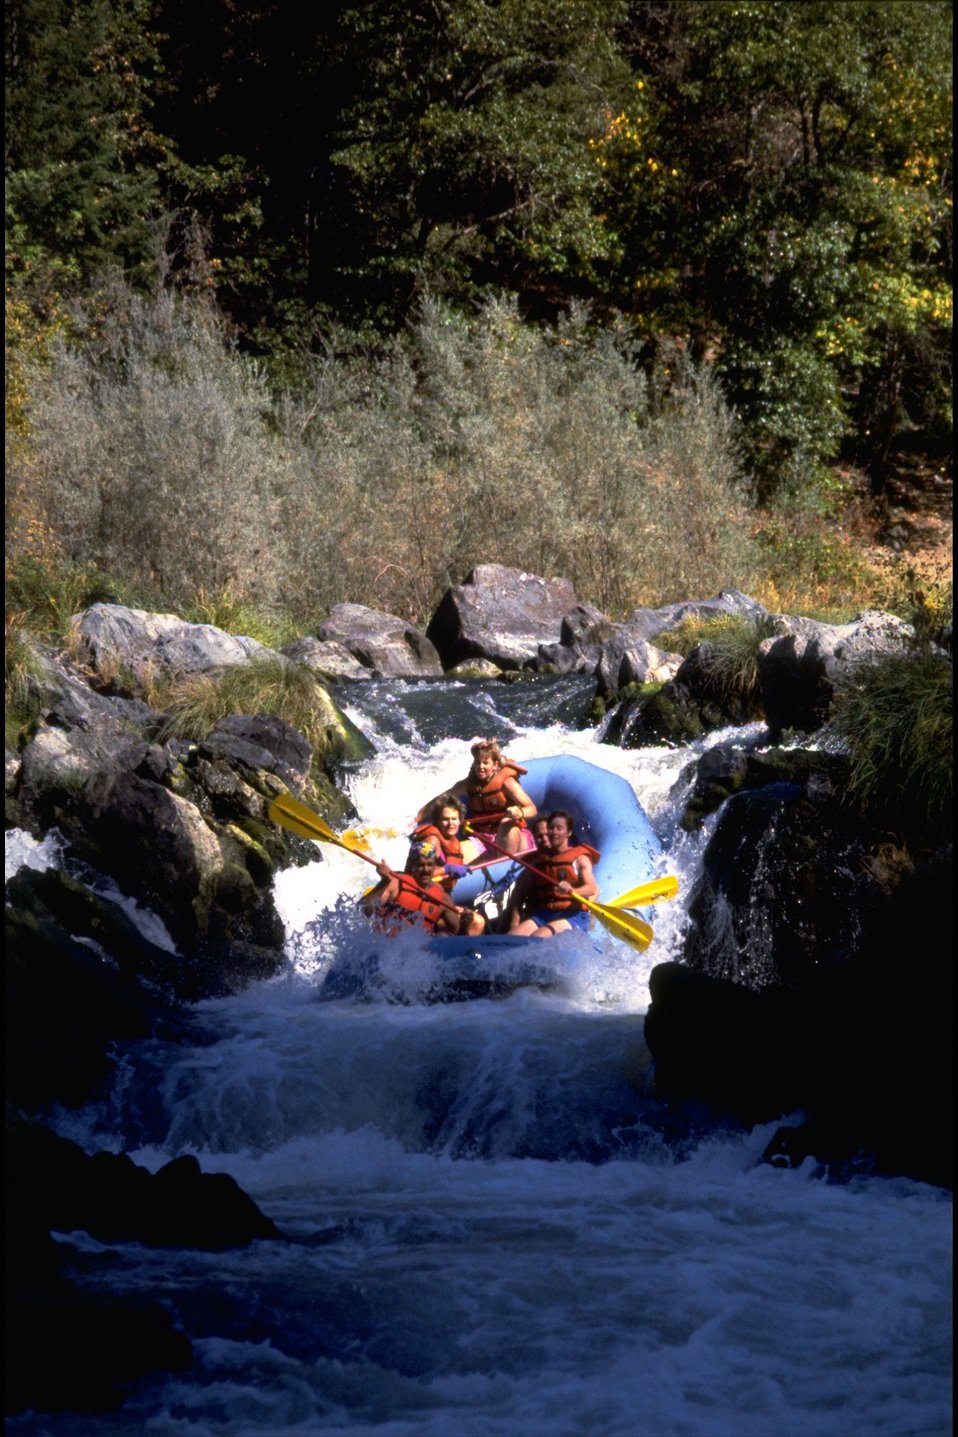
Rogue River - Rainie Falls, wild section. Paddle Raft at bottom of middle chute, 950 cfs.